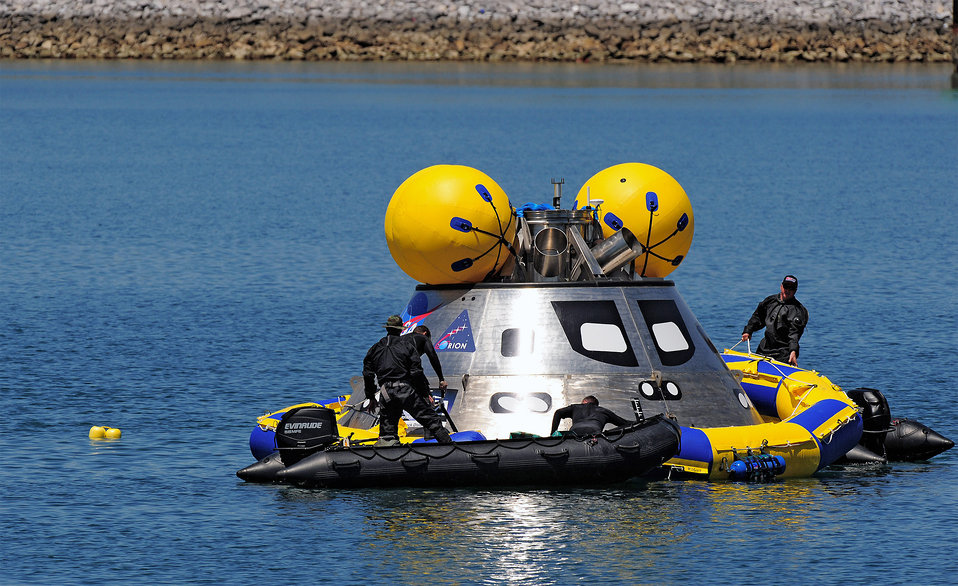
Pararescuemen conduct water test of new NASA capsule

Pararescuemen deploy an inflatable flotation collar during recovery testing on a mockup of the Orion crew exploration vehicle March 8 at the Trident Basin at Port Canaveral, Fla. The collar is designed both to stabilize the capsule after water landing and provide a platform for recovery personnel to stand on during the operation. Reservists from the Reserve's 920th Rescue Wing provide contingency medical and recovery support for all NASA shuttle launches.